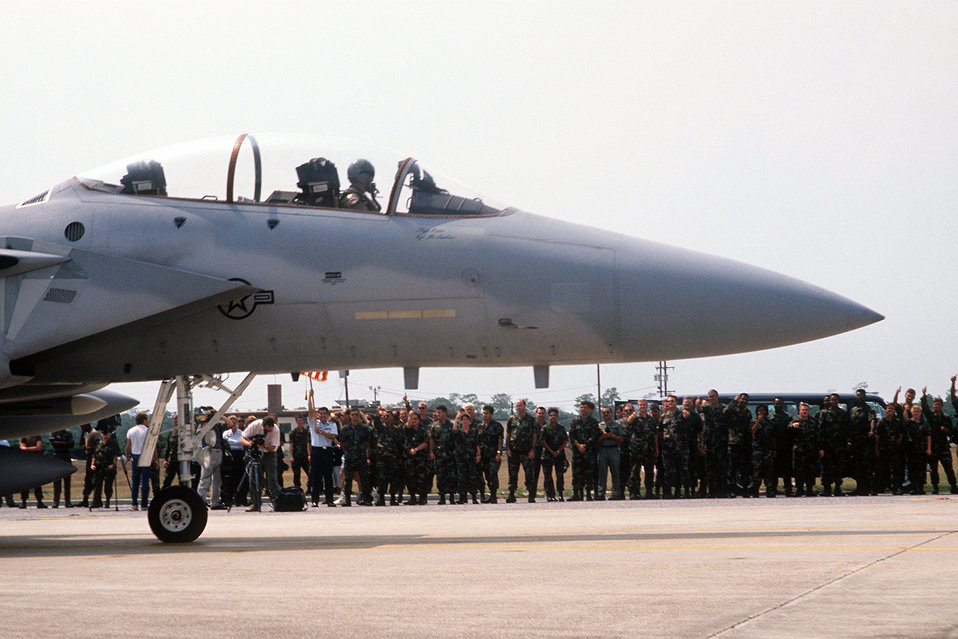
F-15D Eagle

1990's -- Base personnel stand by as a 58th Tactical Fighter Squadron F-15D Eagle aircraft prepares to deploy to Saudi Arabia during Operation Desert Shield.